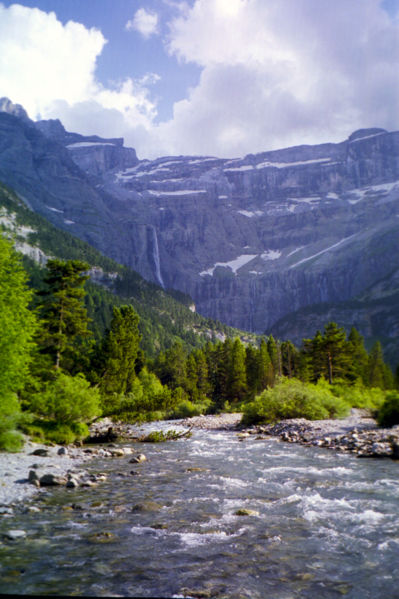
Cirque de Gavarnie, French Pyrenees.